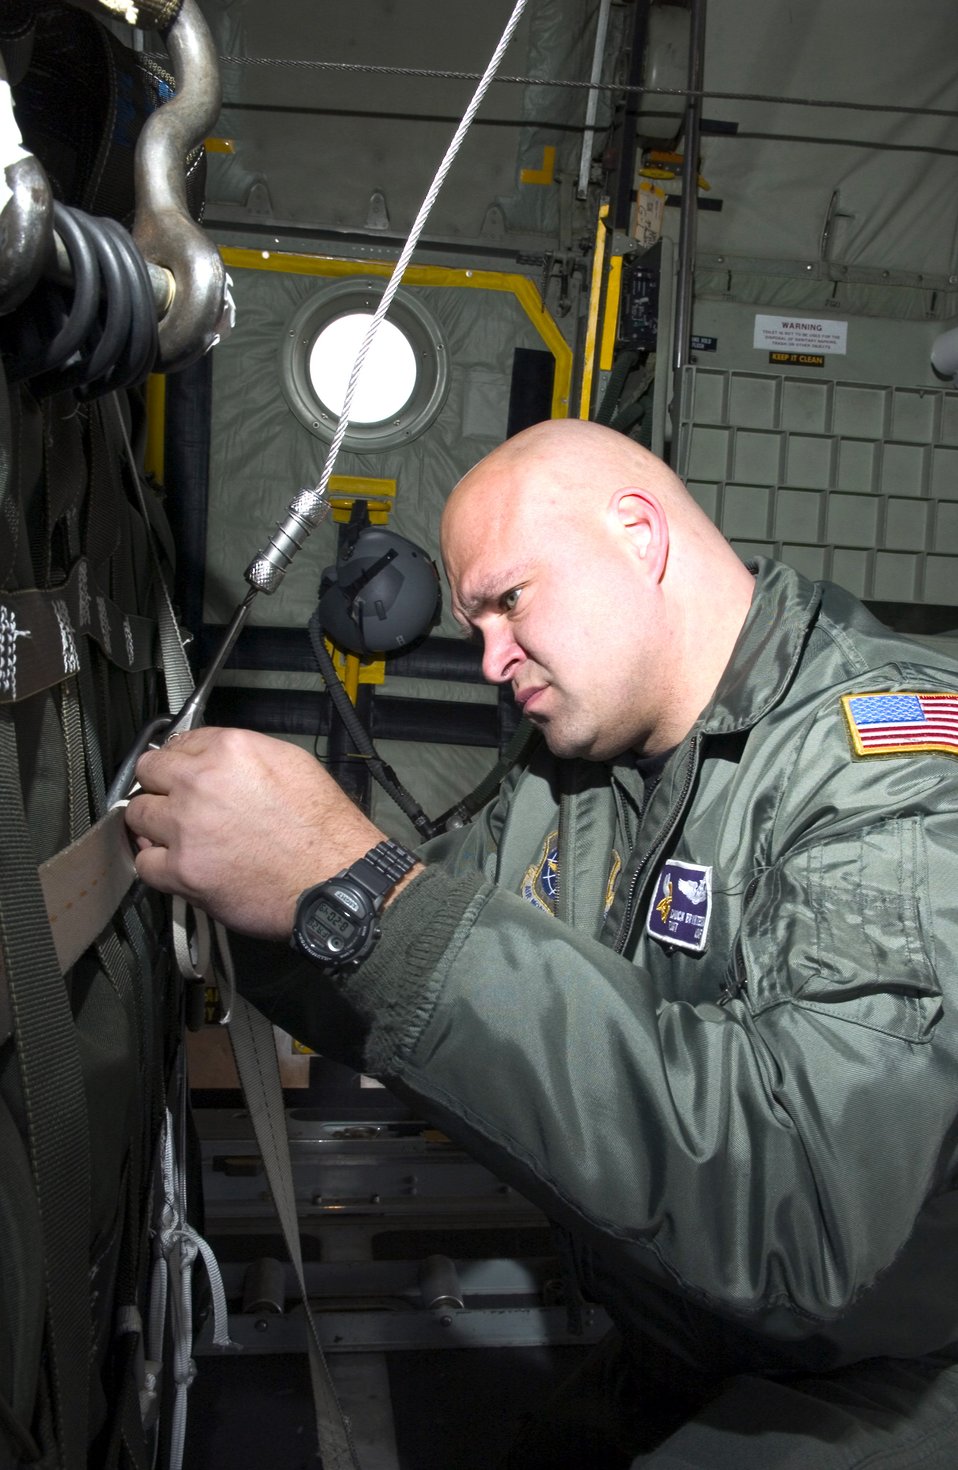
Reserve wing, Army unit join forces at Red Flag-Alaska

Tech. Sgt. Chuck Brynteson secures container delivery systems in a C-130 Hercules at Elmendorf Air Force Base, Alaska, as part of Red Flag-Alaska 06-2 exercises on Friday, April 28, 2006. Sergeant Brynteson is with the 96th Airlift Squadron at Minneapolis-St. Paul Joint Air Reserve Station, Minn.